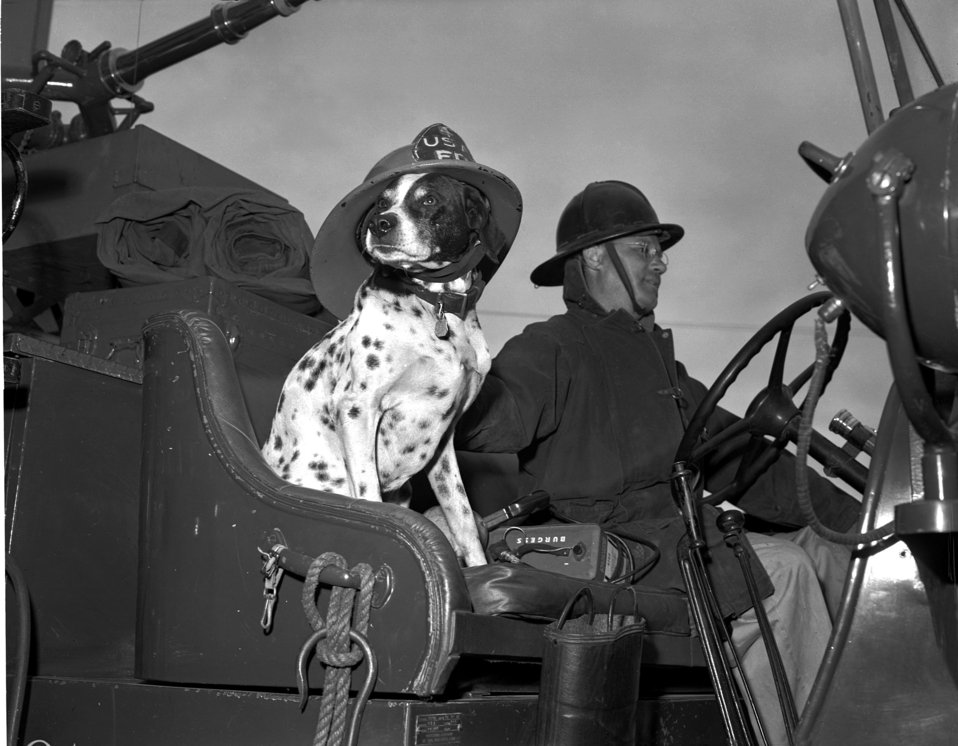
Fire Cheif and Mascot Oak Ridge

7949-2 DOE photo by J. P. Tarver

Chief and mascot of Oak Ridge Fire Department East Village Oak Ridge Tennessee 4/14/1952